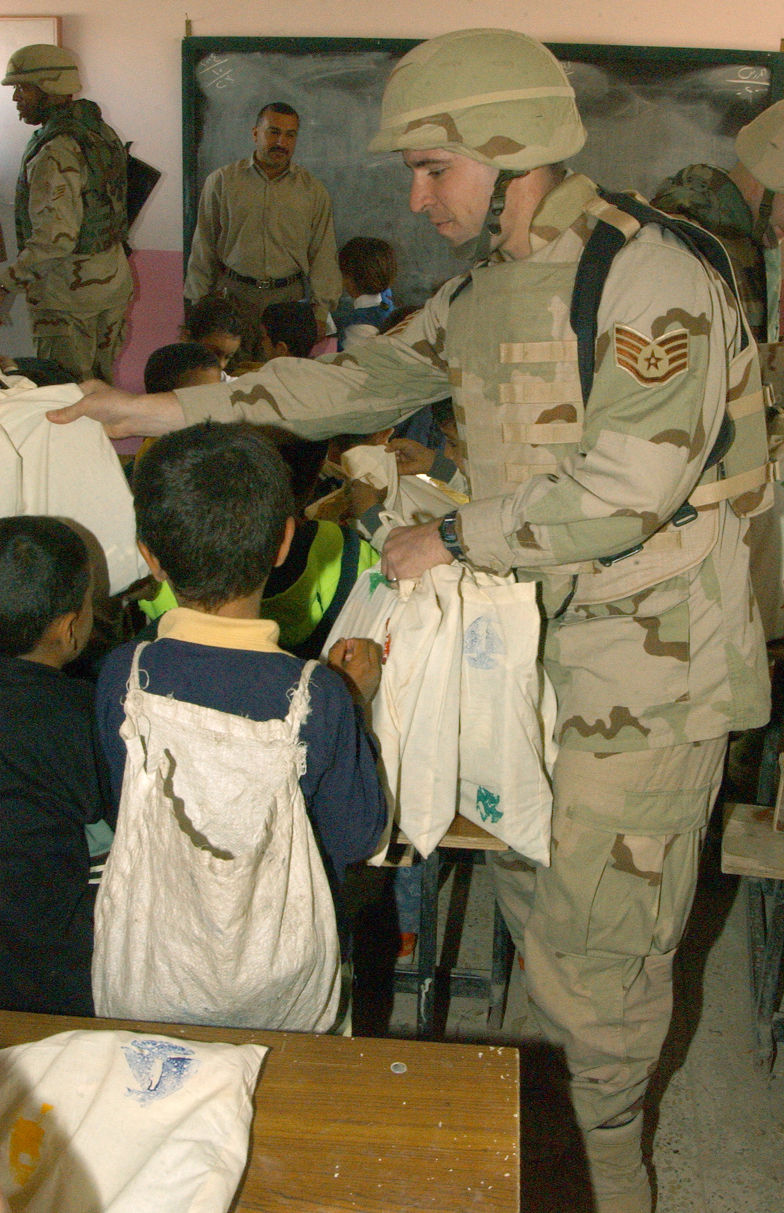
Airmen take part in Operation Pencil Box

NEAR BALAD AIR BASE, Iraq -- Staff Sgt. Nate Brown hands school supplies to students at an elementary school here Oct. 24. The visit was part of Operation Pencil Box, a humanitarian project to deliver school supplies to Iraqi children. Sergeant Brown is an administrator assigned to the 332nd Air Expeditionary Wing at the air base.